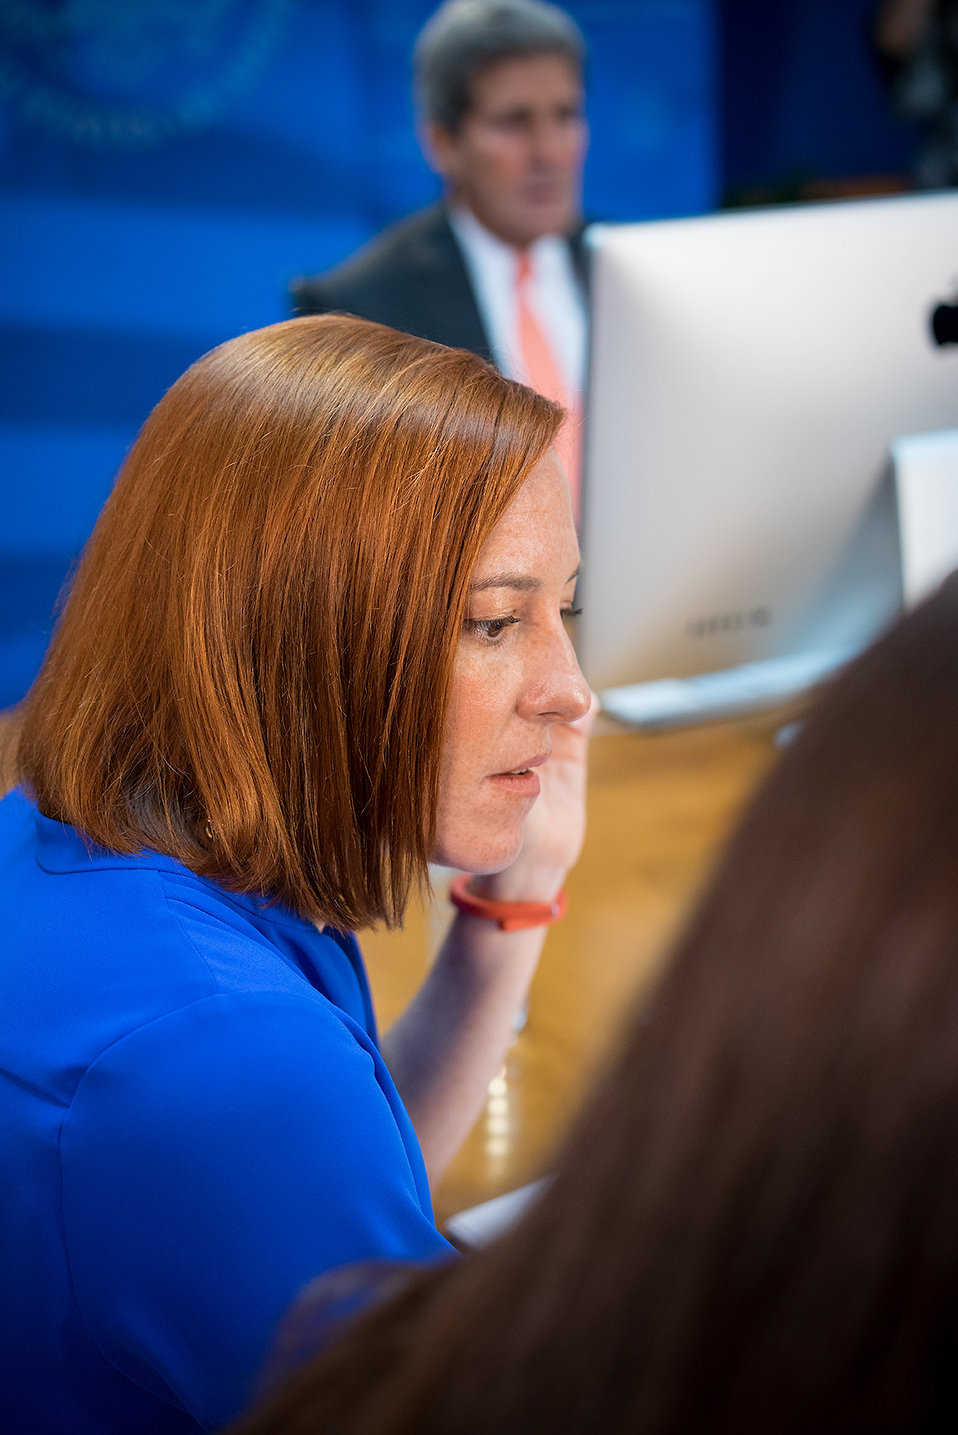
Secretary Kerry Participates in a Twitter QandA with Bill Nye

U.S. Department of State Spokesperson Jen Psaki assists with a Twitter Q&A with U.S. Secretary of State John Kerry and Bill Nye the Science Guy during the Our Ocean Conference on June 17, 2014.